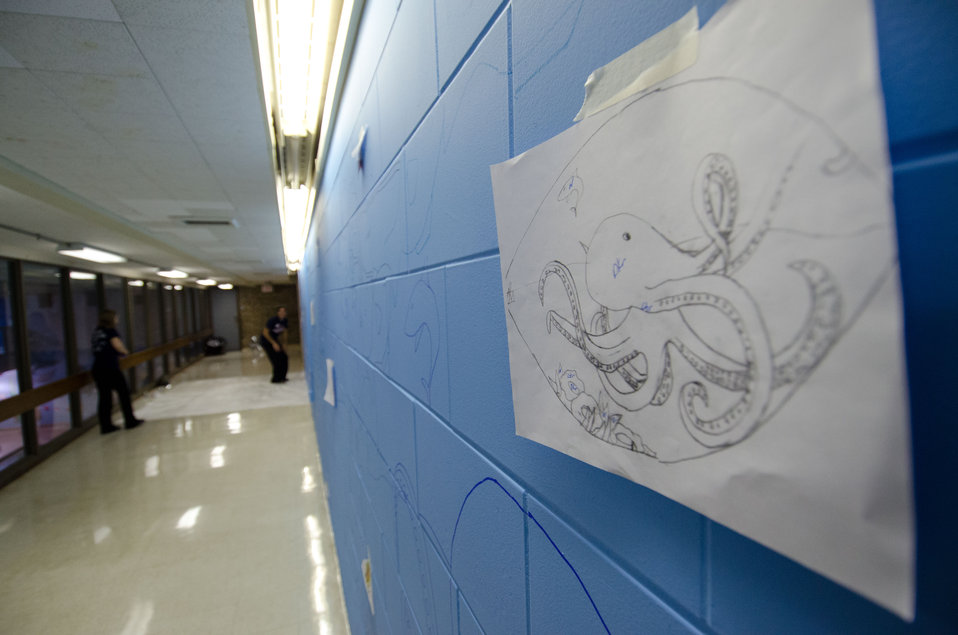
Sketches used for graphic designs on walls where volunteers will paint murals during District of Columbia Public Schools’ (DCPS) Beautification Day, on Saturday, August 25, 2012, at Thurgood Marshall Elementary School, in Washington, D.C. Each year people are invited to help “spruce up” public school facilities in preparation for the first day of school. More than 70 volunteers pitched in at this large school facility. The People’s Garden effort involves building and painting raised planter boxes, then preparing the soil mixture so they are “ready to grow.” Additionally, a team that includes descendants of U.S. Supreme Court Justice Thurgood Marshall assembles a prefabricated garden toolshed. The Justice’s son, John Marshall leads the team, which includes Brianna the Justice’s great-grand daughter in one of many multi-generational efforts at this school today. Washington Capitals Forward Mike Riberio, his family and mascot Slapshot participated in every project underway at Marshall School. From the outside gardens, to inside murals, and robotics worktable construction, the teams made their goals.